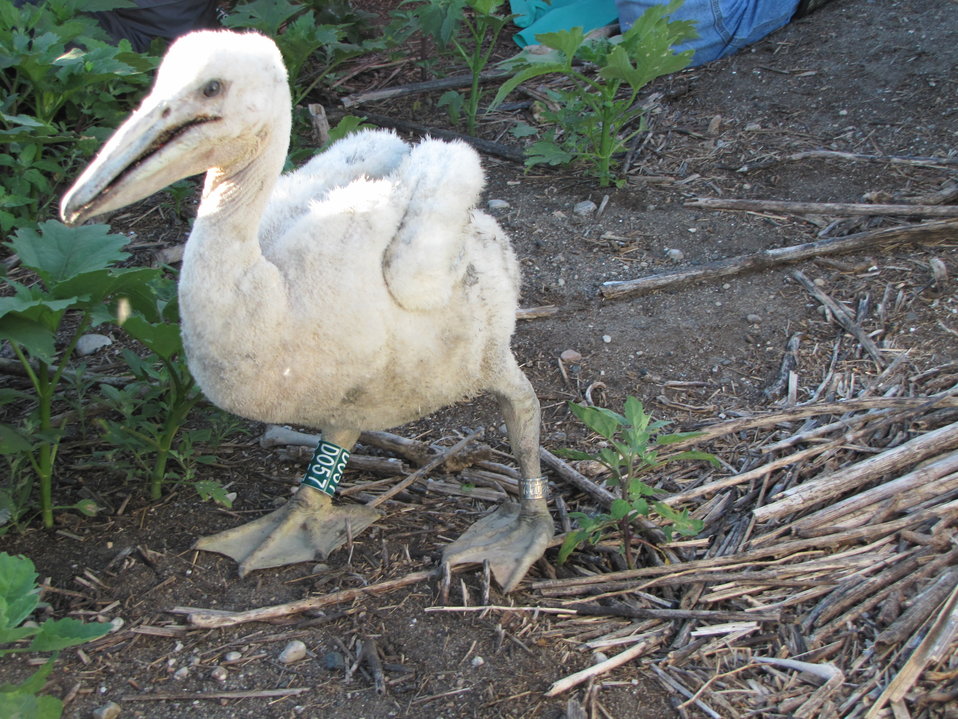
Young banded pelican

A young pelican newly banded on Chase Lake National Wildlife Refuge in North Dakota.